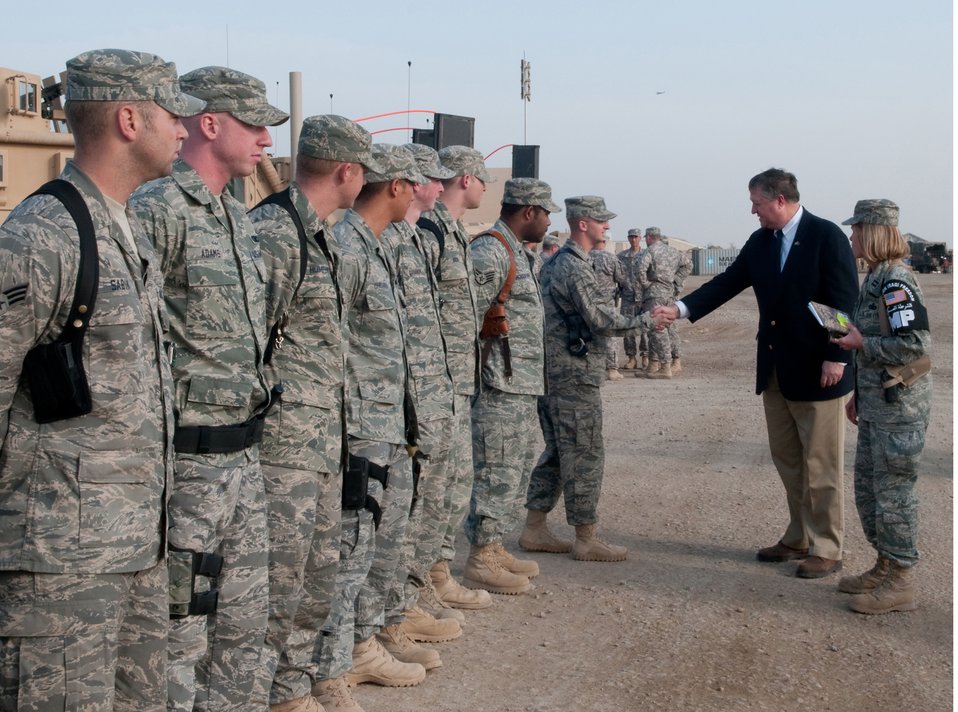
Secretary of the Air Force visits Ali Airmen

Capt. Jutta Arkan, commander, Provost Marshall's Office, introduces her team of Joint Expeditionary Tasking Airmen to Secretary of the Air Force Michael Donley during his visit to Ali Base, Iraq, Jan. 31, 2010. These JET Airmen are assigned to the U.S. Army, 4th Brigade Combat Team, 1st Armored Division. They perform law and order missions as military police for the Army.